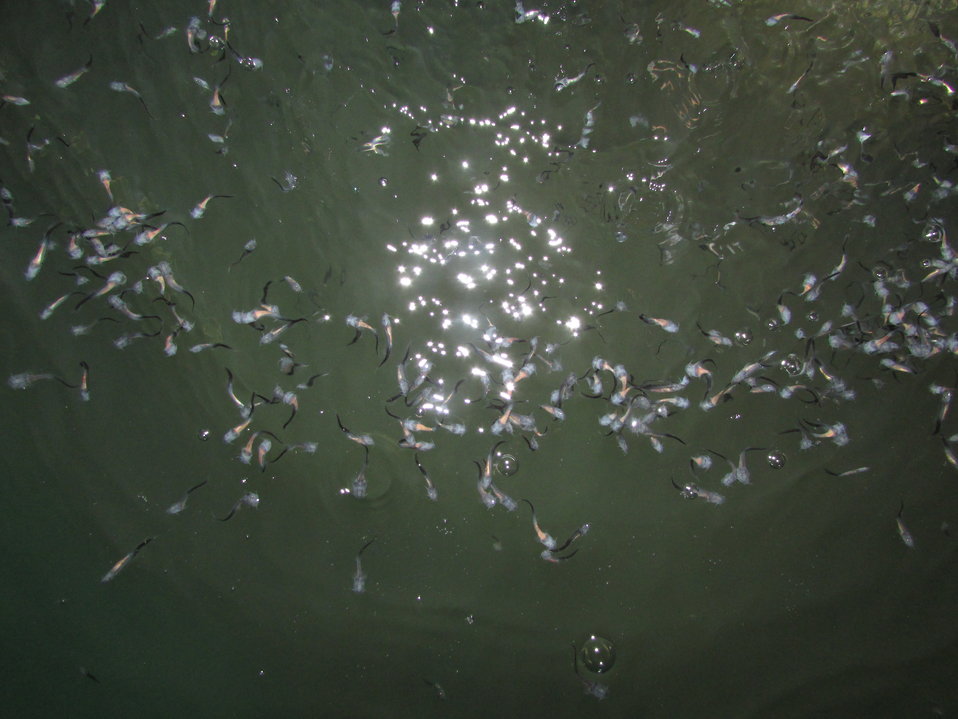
Paddlefish Swarm

This is what our two week old paddlefish look like when they are swarming for food. You can actually see the orange in their stomachs, the color of the crushed pellets they eat.